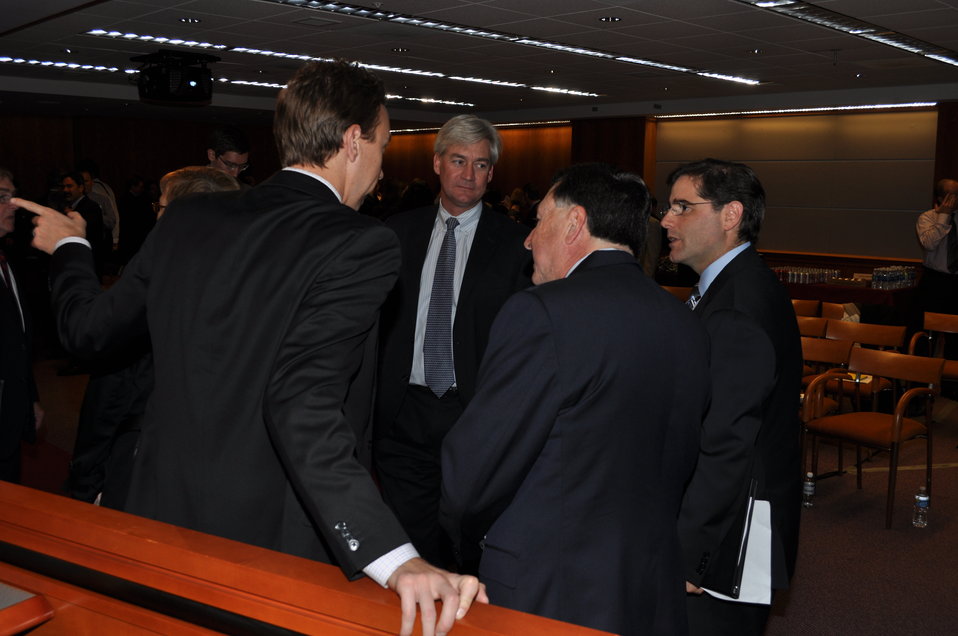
Spectrum Summit